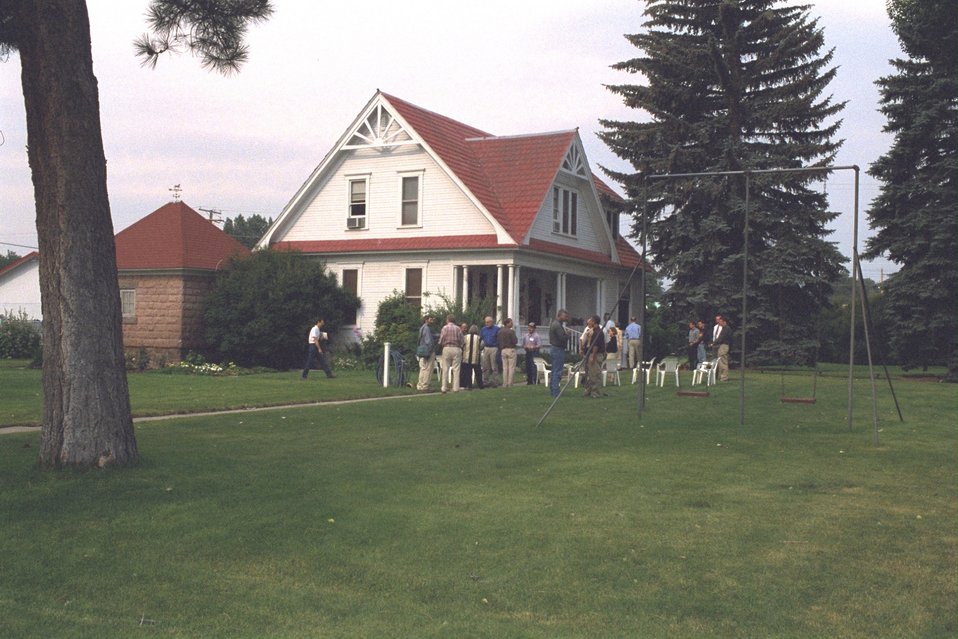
Crowd outside Sage Country Inn, where Secretary Babbitt met with SEAORRAC county court and environmentalists on Steens designation.